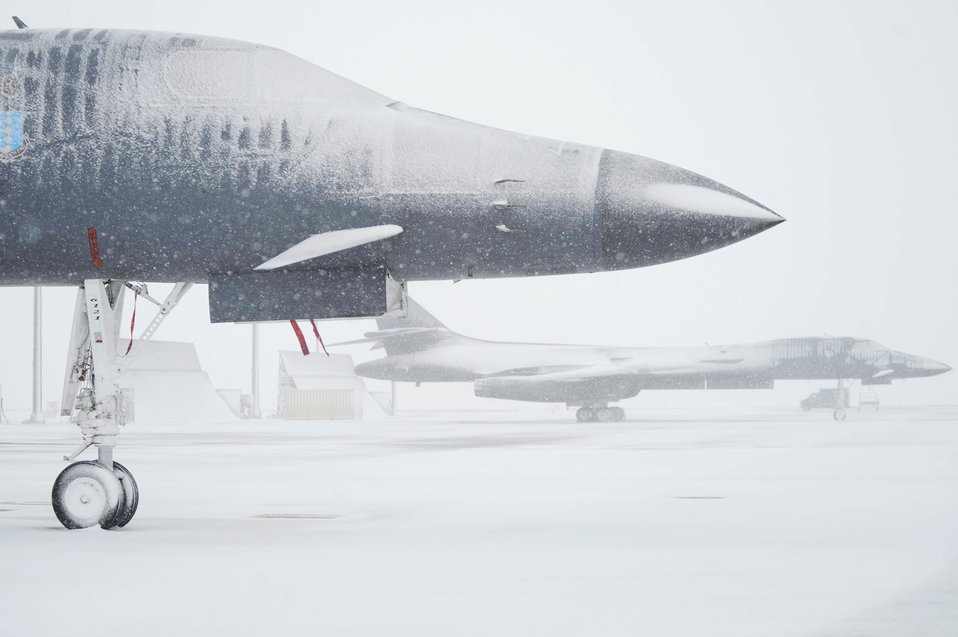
Baby, it's cold outside

The first big snowfall of the winter season collects on B-1B Lancers at the Ellsworth Air Force Base, S.D., flightline Oct. 29, 2009. The B-1 serves as the supersonic component of the Air Force's long-range bomber force, along with the subsonic B-52 Stratofortress and B-2 Spirit.